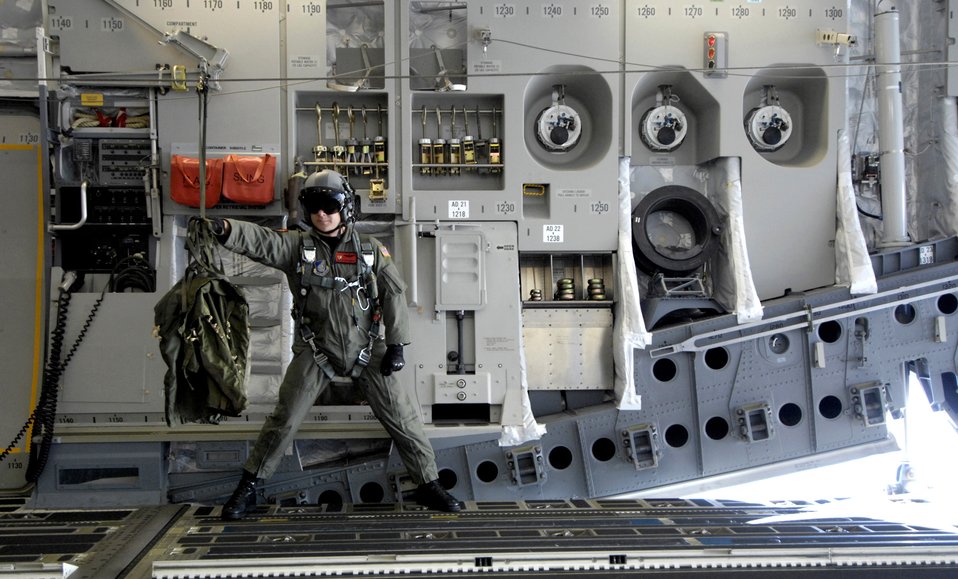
Andersen airdrop

Staff Sgt. Allen Culbreth retrieves static line deployment bags after a container delivery system was released from a C-17 Globemaster III during an airdrop mission Dec. 14 over Andersen Air Force Base, Guam. The C-17 from Hickam Air Force Base, Hawaii, is conducting airdrop training at Andersen AFB. The Airmen is a loadmaster with the 535th Airlift Squadron.